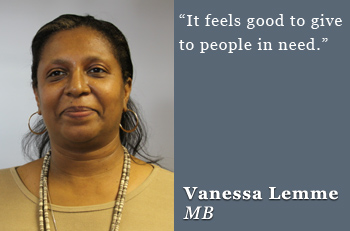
vanessa-lemme